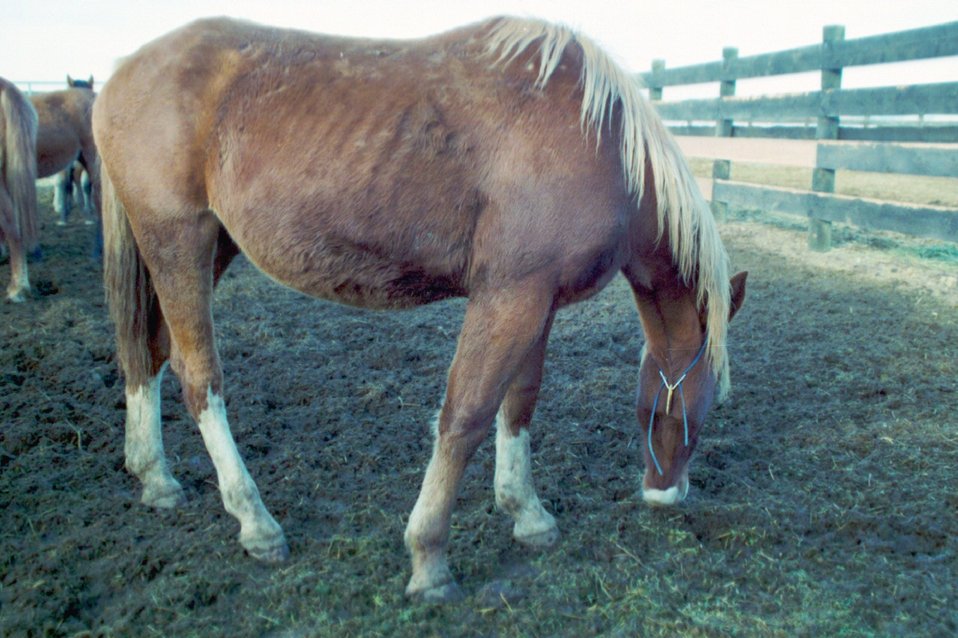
Wild Horse and Burro Adoption